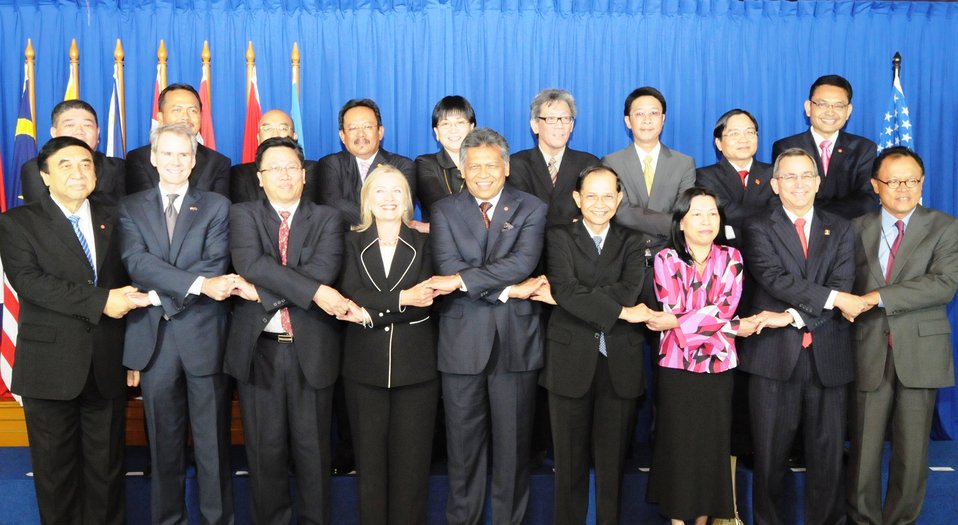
Secretary Clinton Smiles for a Photo With ASEAN Leaders

U.S. Secretary of State Hillary Clinton is joined by ASEAN Secretary General Dr. Surin Pitsuwan, U.S. Ambassador to ASEAN David Carden, U.S. Ambassador to Indonesia Scot Marciel, and ASEAN leaders for a group photo prior to an hour long meeting at the ASEAN Secretariat in Jakarta, Indonesia, September 4, 2012.